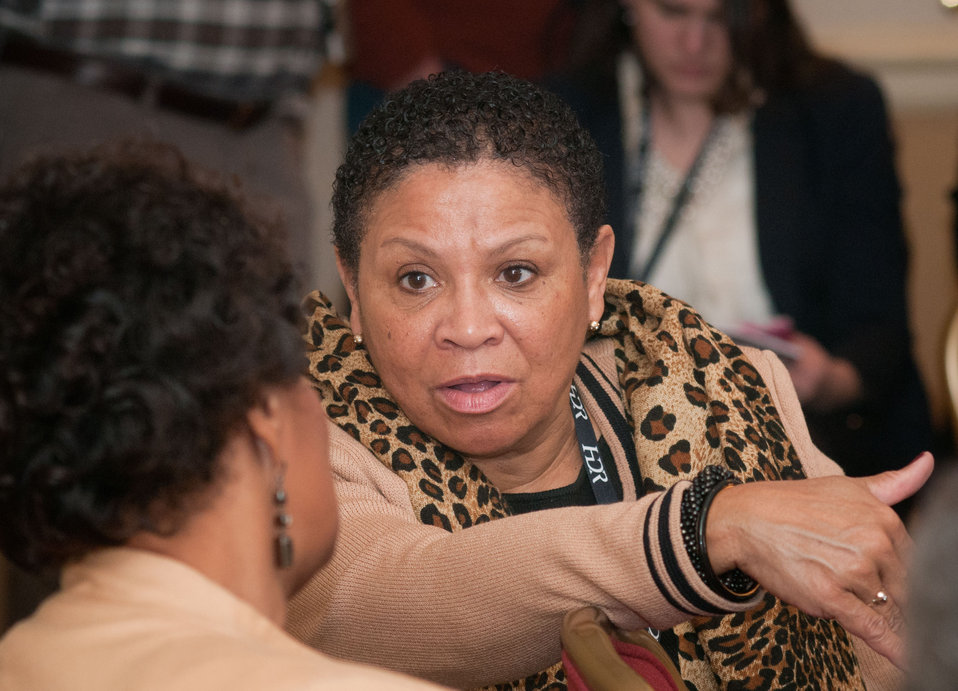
City of Rialto, CA Mayor Deborah Robertson speaks with another mayor at the U.S. Conference of Mayors 81st Winter Meeting, Food Policy session, in Washington D.C., on Thursday, Jan 17, 2013.